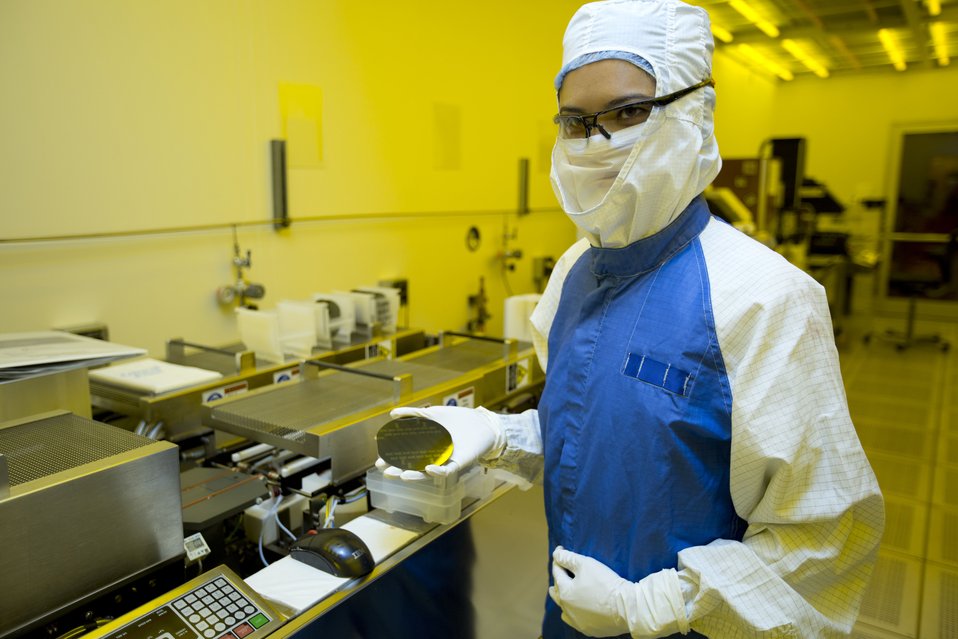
LAWRENCE LIVERMORE NATIONAL LABORATORY RESEARCHER WILL FABRICATE NEUTRAL INTERFACES ON THIS FINISHED SILICON WAFER, POLYMER DEVICES DESIGNED TO BYPASS DAMAGED NERVES AND NEUTRONS IN HUMANS.

THE DEVICES ARE BEING ENGINEERED TO RESTORE SIGHT, HEARING, AND SPEECH AND EVEN REANIMATE LIMBS. ONE SUCH DEVICES IS THE FIRST EVER FDA-APPROVED RETINAL PROSTHESIS.